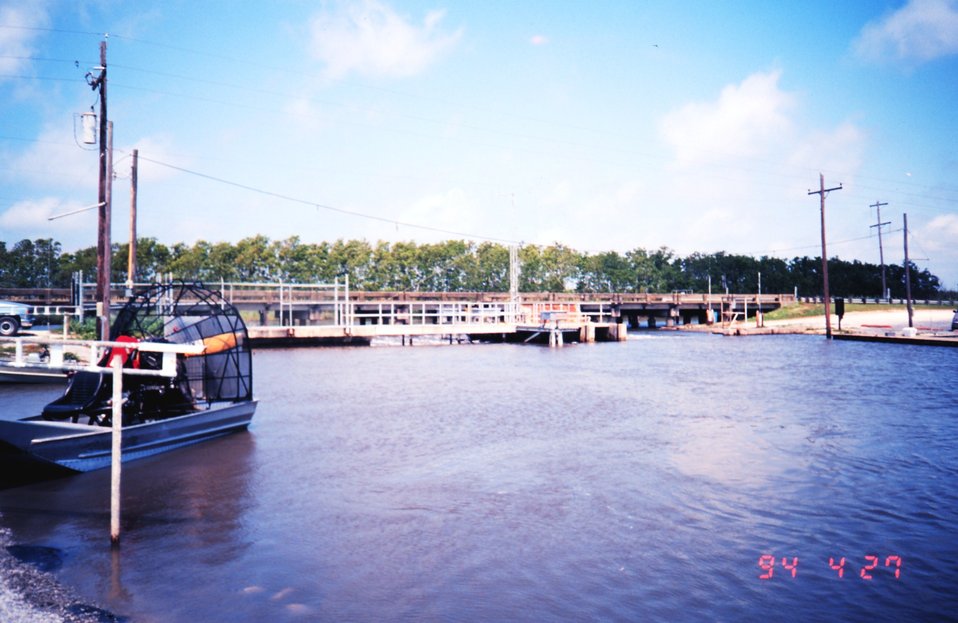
Bridge and water control structure in Cameron Parish, Louisiana.